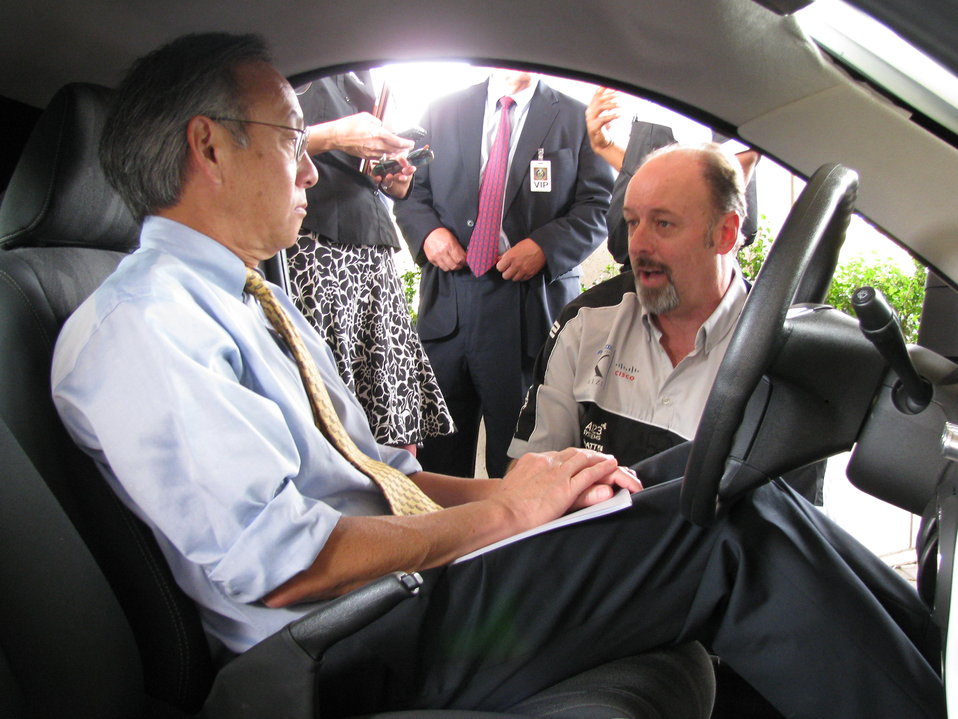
X Prize 035